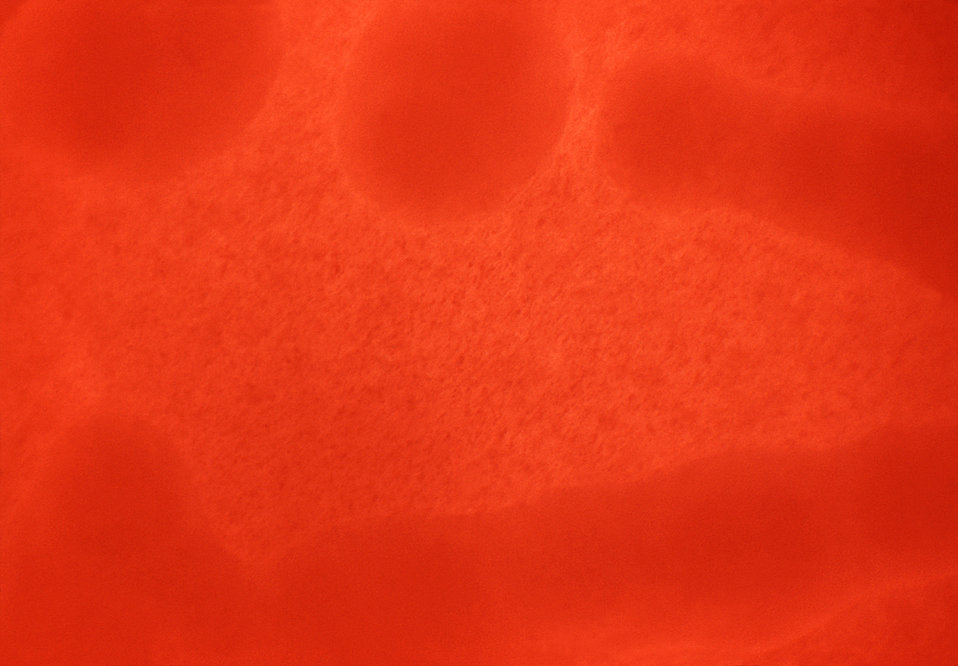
Magnified 100X, this 1977 photograph depicted a Petri dish filled with trypticase soy agar medium containing 5% defibrinated sheep's blood, i.e., blood agar plate (BAP). After having been inoculated by streaking the surface of the BAP with a non-hemolytic group A Streptococcus pyogenes (GAS) bacteria. The BAP was incubated in a carbon dioxide enriched atmosphere at 35oC for 24 hours, and grew bacterial surface colonies with no characteristic color changes surrounding each colony, or in the stabbed areas. Under examination, no red blood cells in the blood agar medium had been altered, or "hemolyzed", indicating that these bacteria were indeed non-hemolytic in nature.Infection with non-hemolytic GAS can result in a range of symptoms identical to that of typical beta-hemolytic GAS:- No illness- Mild illness (strep throat or a skin infection such as impetigo)- Severe illness (necrotizing faciitis, streptococcal toxic shock syndrome)